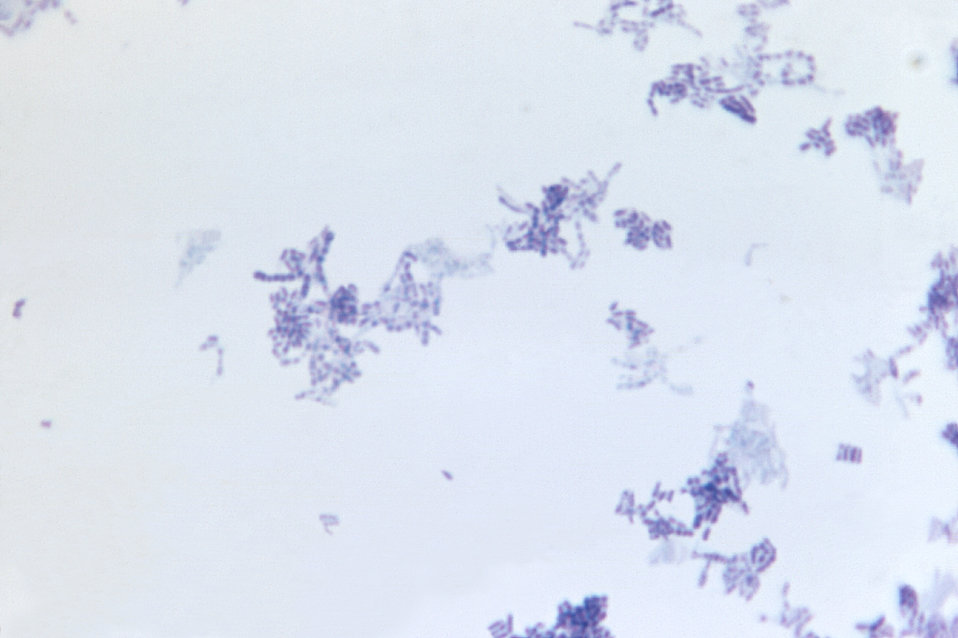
Under a magnification of 1125X, this Giemsa-stained photomicrograph revealed the presence of Gram-positive Corynebacterium sp. bacteria. Some species of the genus Corynebacterium, are actually a part of the normal population of human skin flora, however, one specie, Corynebacterium diphtheriae, causes an upper respiratory tract illness known as 'diphtheria'. DiphtheriaClinical Features